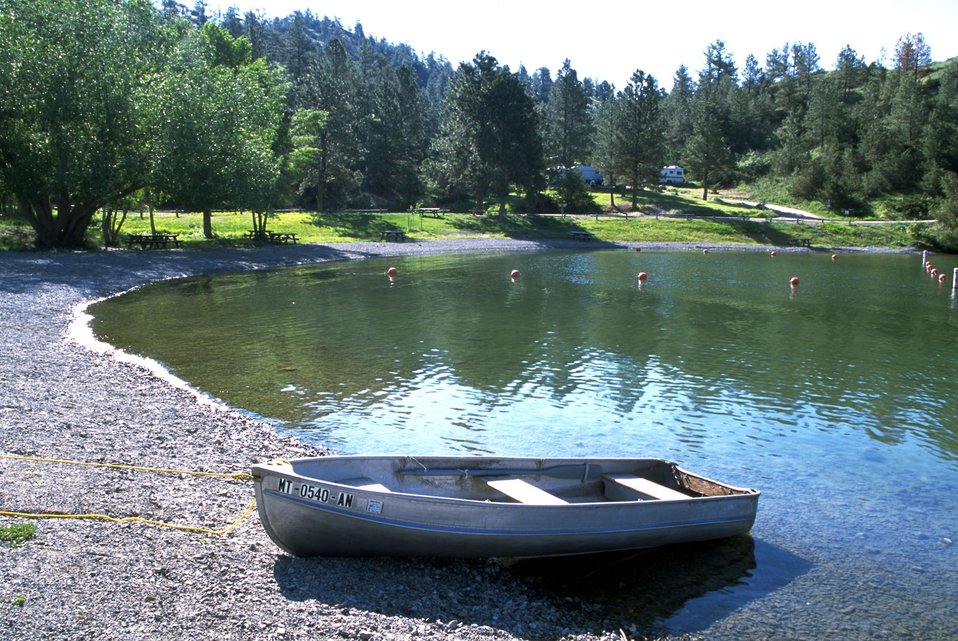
Boat on the beach at Log Gulch Campground